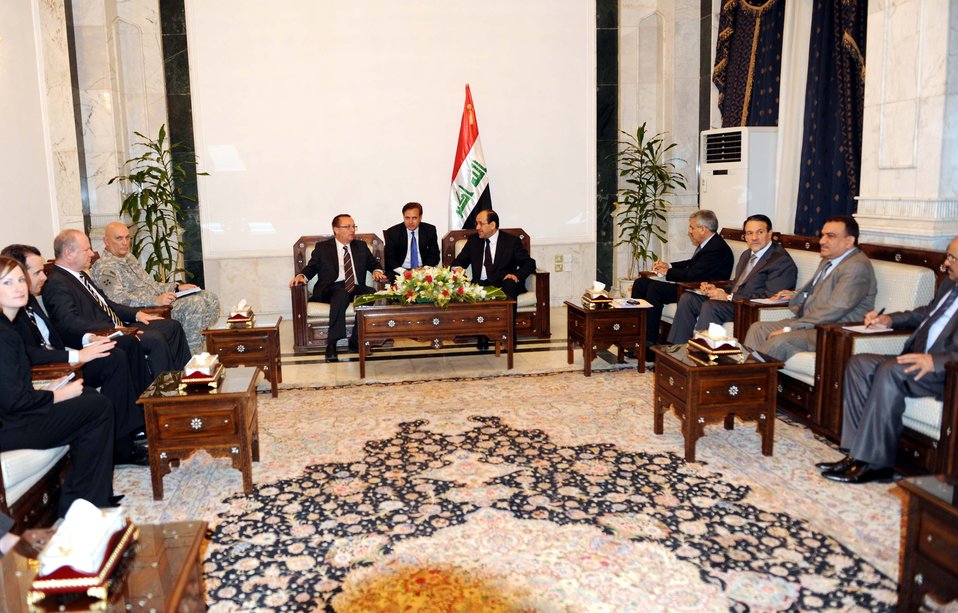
Assistant Secretary for Near Eastern Affairs Jeffrey Feltman meets with Iraqi Prime Minister Noori Al Maliki in Iraq on August 14, 2010.